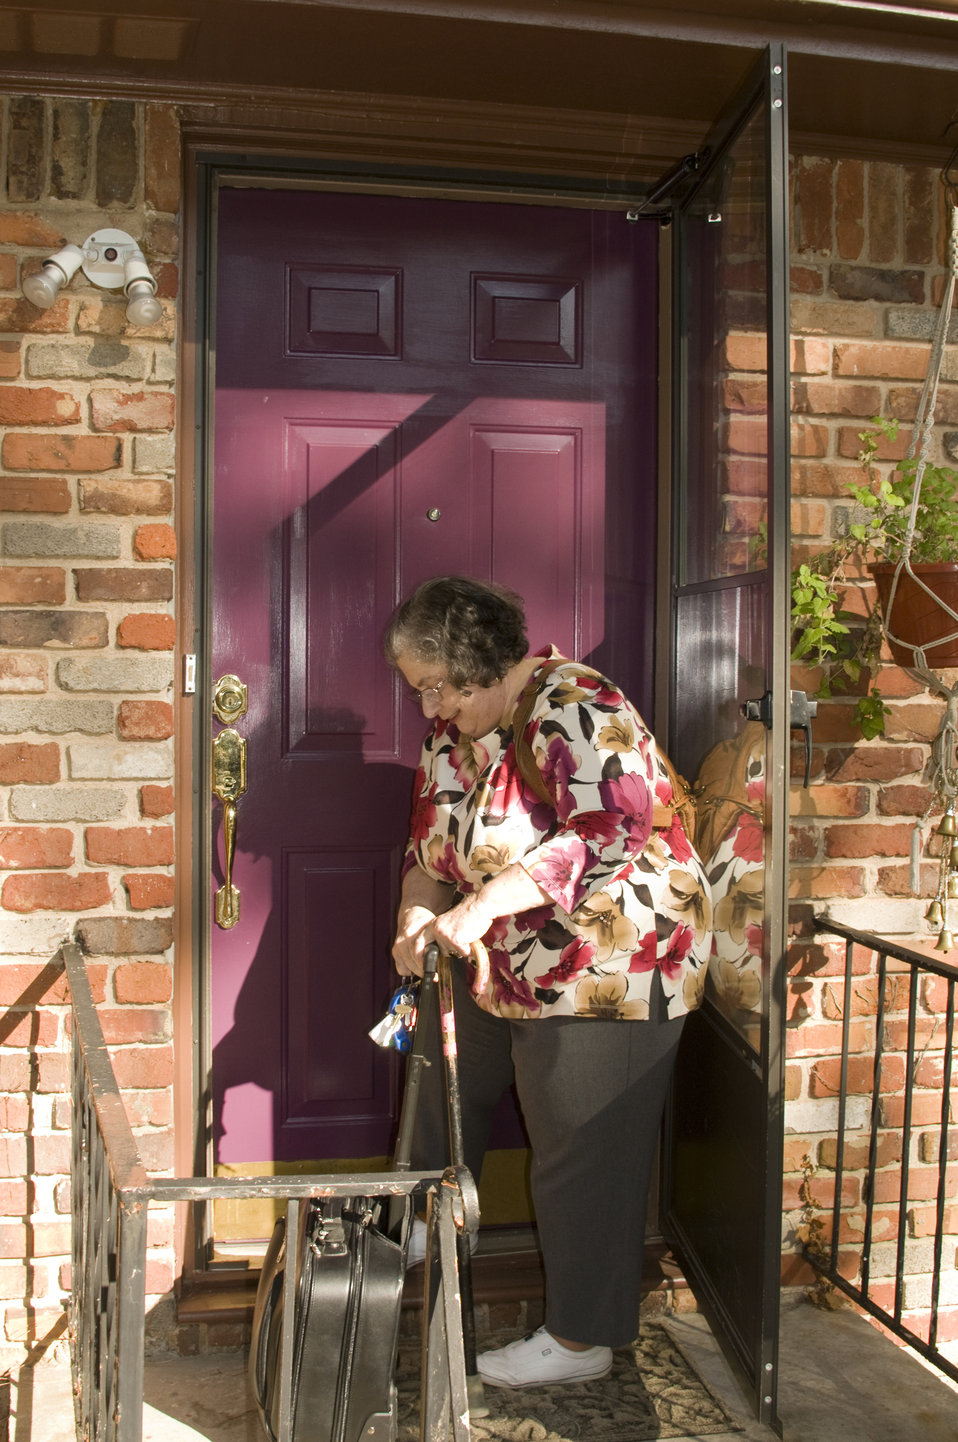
The woman pictured here is a rheumatoid arthritis patient, and was not letting her painful condition impeded her from carrying on with her daily activities, which included the use of a baggage carrier that she was using to move a small piece of luggage over the threshold of her from door. After having fully exited from her home, she had locked her front door. Note that in her left hand she held both her cane, and the handle to the luggage carrier, and was switching the cane to her right hand, which she'd use for support as she walked.